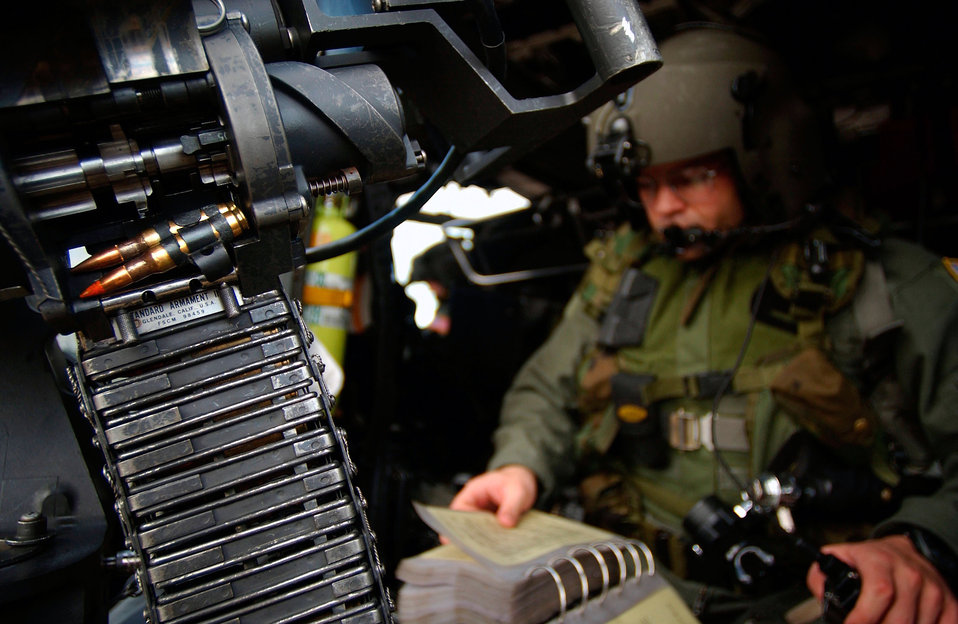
Pave Hawk preparation

LUNGI, Sierra Leone -- Senior Airman Jimmy Ford, an aerial gunner with the 56th Rescue Squadron, Naval Air Station Keflavik, Iceland, reviews checklists on an HH-60G Pave Hawk helicopter July 19. European Command is currently in Sierra Leone to provide personnel recovery and emergency evacuation capability for the Humanitarian Assistance Survey Team in Liberia.